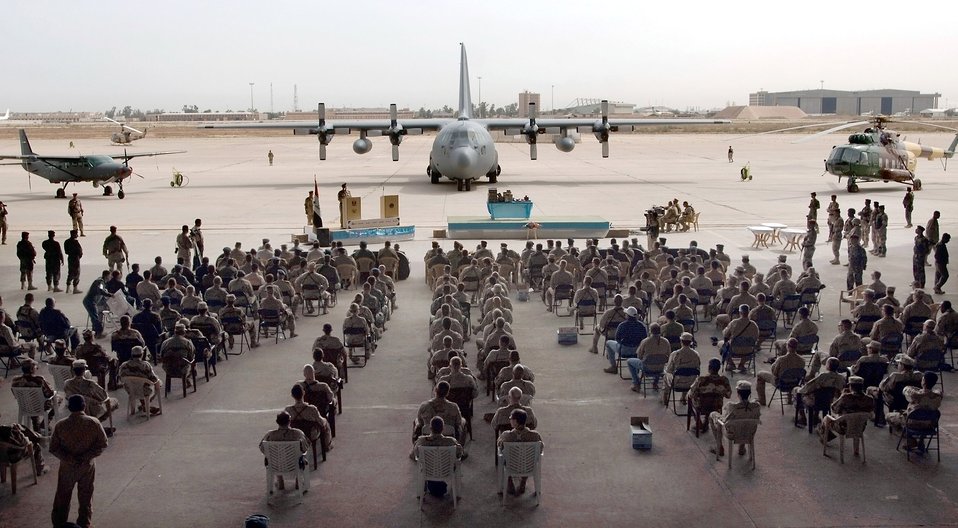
Iraqi air force celebrates 76th anniversary

Approximately 100 distinguished visitors, guests, and Iraqi and U.S. servicemembers gather April 22 to commemorate the 76th anniversary of the Iraqi Air Force at the New Al Muthana Air Base in Baghdad, Iraq.